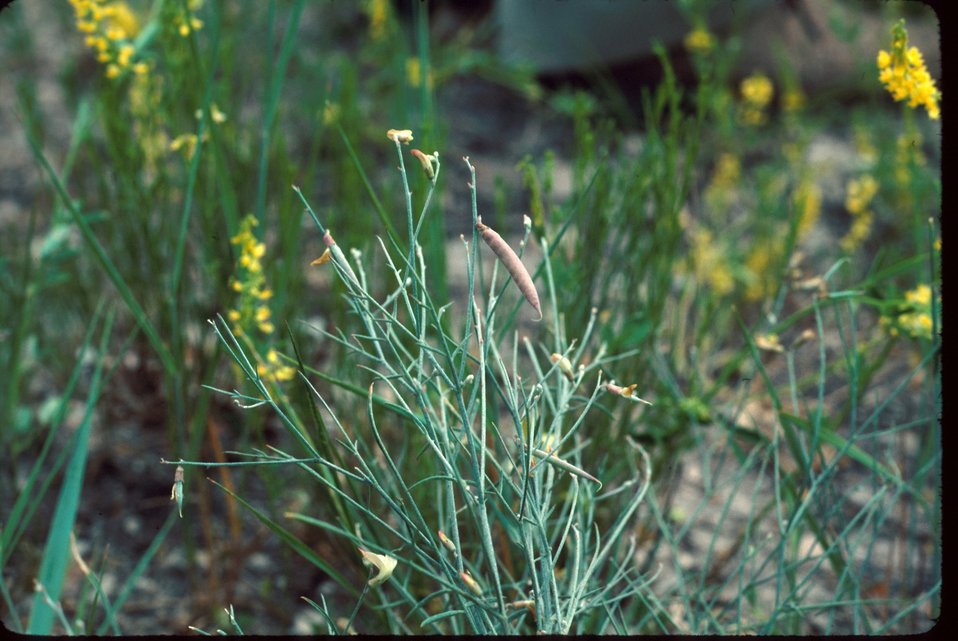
Astragalus convolarisis Milkvetch Wildflower